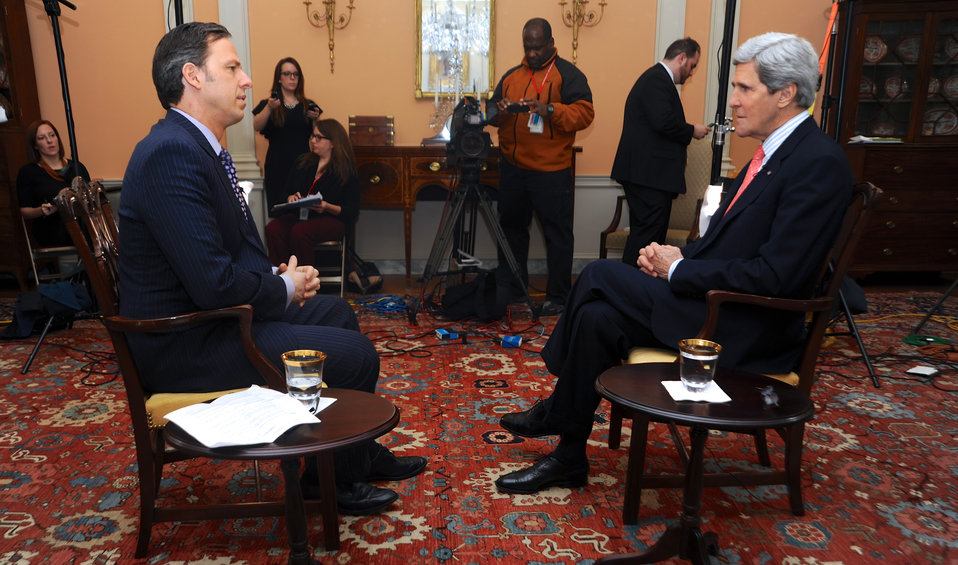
Secretary Kerry Holds One-on-One Interview With CNN's Tapper

U.S. Secretary of State John Kerry and CNN Chief Washington Correspondent Jake Tapper, anchor of the network's 'The Lead,' settle in for a one-on-one interview at the U.S. Department of State's Monroe Room in Washington, D.C., on February 5, 2014.